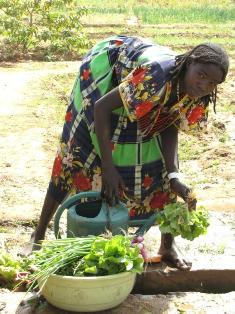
A Sudanese Refugee Cleans Her Produce

A Sudanese refugee cleans her home-grown produce in Gaga Camp in Chad on February 12, 2009.In fiscal year 2010, two principal factors drove PRM’s development of a humanitarian strategy for Chad and the region. The first was security. Despite the presence of UN peacekeepers in Chad, both civilians and humanitarian workers have been subjected to an increasing level of banditry: robbery, carjackings, and at times even kidnapping and murder. Now the Chadian government has asked the UN mission to leave the country, an event that would further expose humanitarians and refugees to danger. The second factor was eastern Chad’s qualification as a protracted refugee situation, meaning it has been in existence for over five years. Even with some hopeful political steps towards peace in Darfur in early 2010, the refugees will likely remain in Chad for several more years. With lifesaving services well-established in the camps, therefore, PRM has shifted its focus to programs that provide a longer-term benefit, such as education and vocational training.